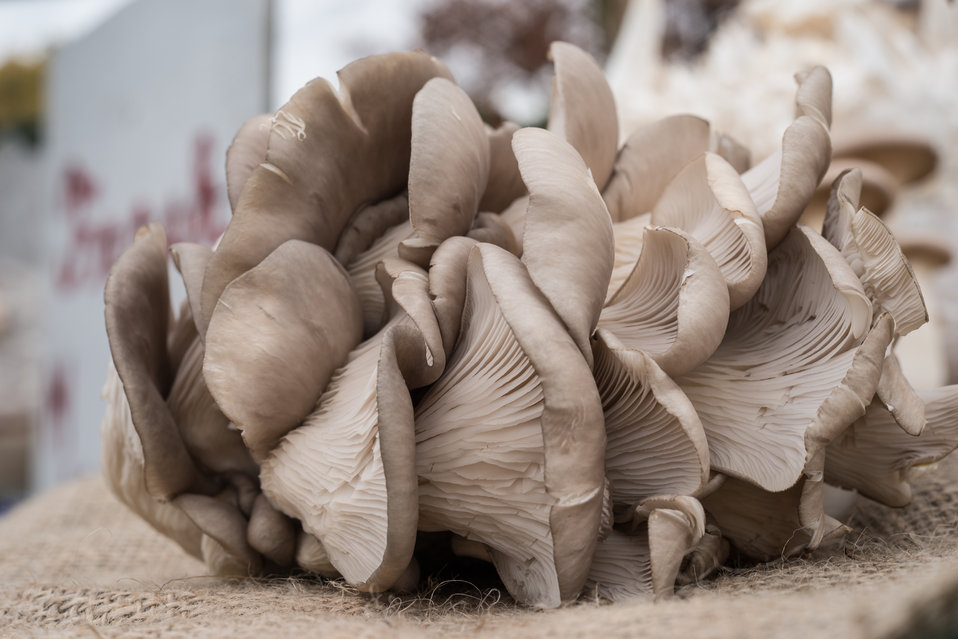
Oyster (light gray) mushrooms on display at the U.S. Department of Agriculture (USDA) farmers markets and Harvest Festival at the USDA Whitten Building east parking lot in Washington, DC, on Friday, November 22, 2013.